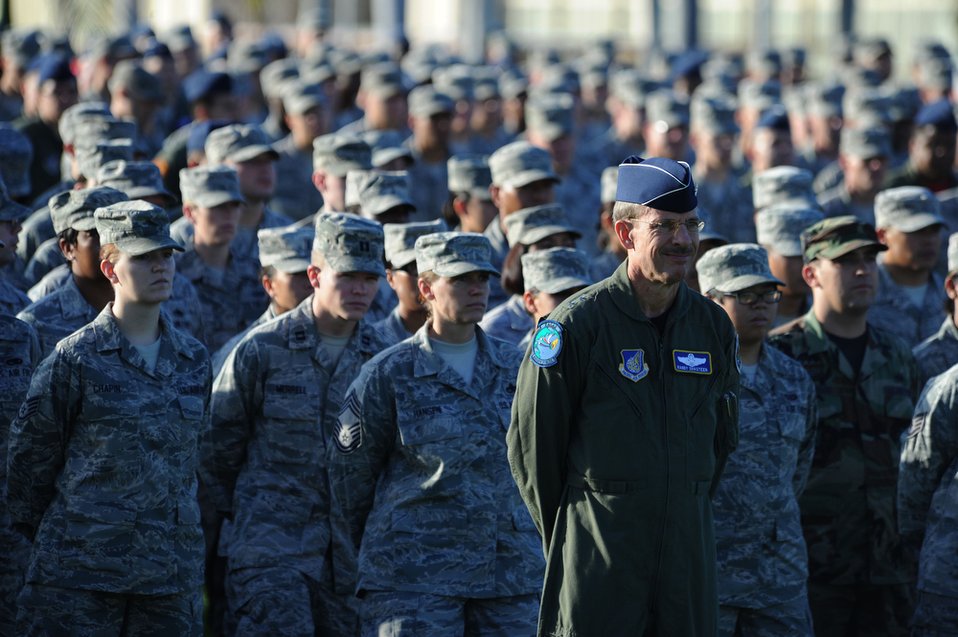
9/11 Ccremony at Joint Base Pearl Harbor-Hickam, Hawaii

Maj. Gen. Randy Shasteen stands at the head of one of three formations comprising active-duty, Guard and Reserve Airmen Sept. 9, 2011, at Joint Base Pearl Harbor-Hickam, Hawaii, to pay tribute to those lost on 9/11. The formation consisted of three columns to honor the three cities where planes crashed.